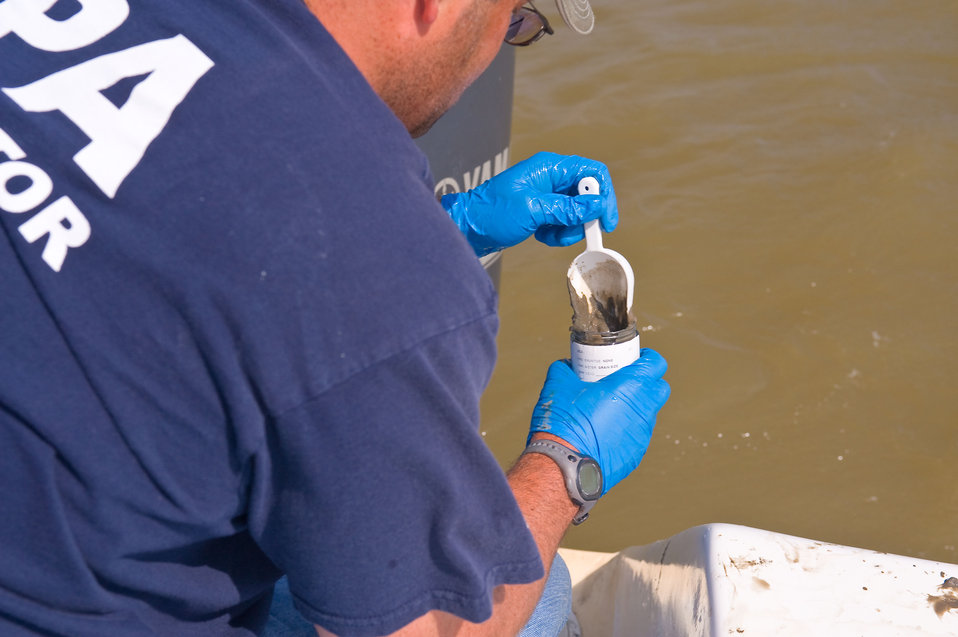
Sediment sampling near shore in the Gulf.

May 12, 2010. These sediment samples were collected out of Cocodrie, La in the Gulf of Mexico. EPA is collecting both sediment and water samples to assess potential oil spill impacts on aquatic life near shore and are analyzing sediment for 29 chemicals that are components of oil.
In this photo: Jarrod Redwine, EPA contractor.